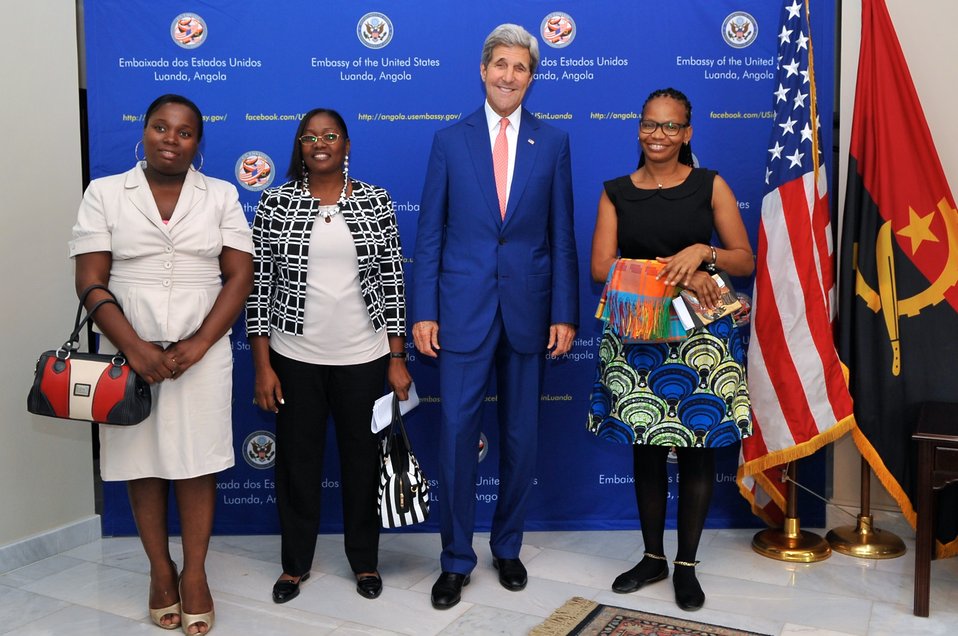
Secretary Kerry Poses With Members of Angolan Civil Society

U.S. Secretary of State John Kerry poses for a photo with a group of Angolan civil society members before sitting down with them for a meeting in Luanda on May 4, 2014.